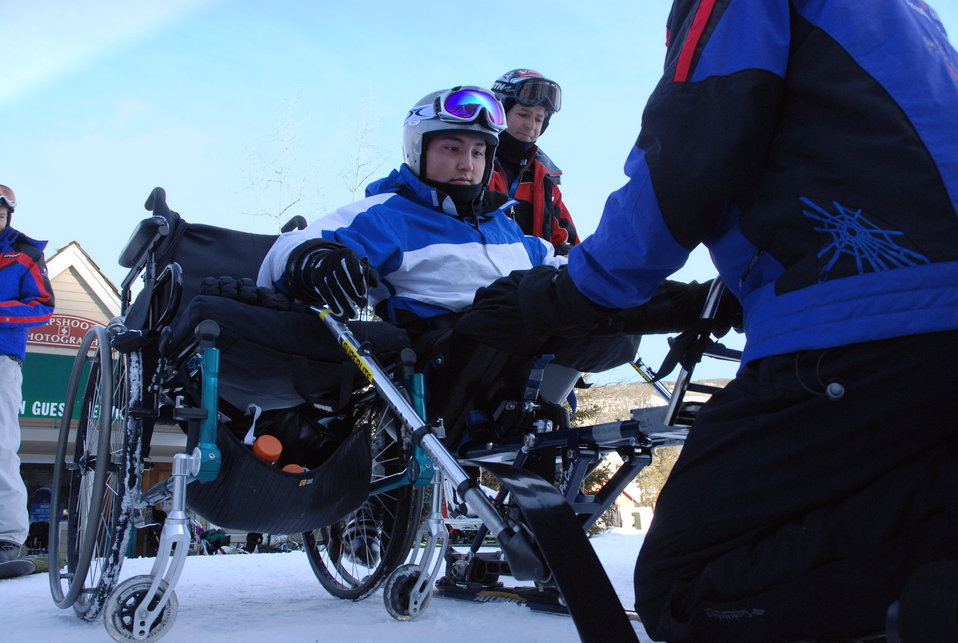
Injured Airman overcomes disabilities on slopes

Airman 1st Class Kevin Krogh (center), with help from an Adaptive Adventures, Inc., instructor, mounts a modified ski basket built for disabled persons Jan. 26 at the annual SnoFest military community event in Keystone, Colo. Airman Krogh, who was injured during an automobile accident, is an F-22 Raptor weapons loaders assigned to Langley Air Force Base, Va. Airman Krogh, together with several other disabled servicemembers, took advantage of the company's free ski lessons offered during the military community event.